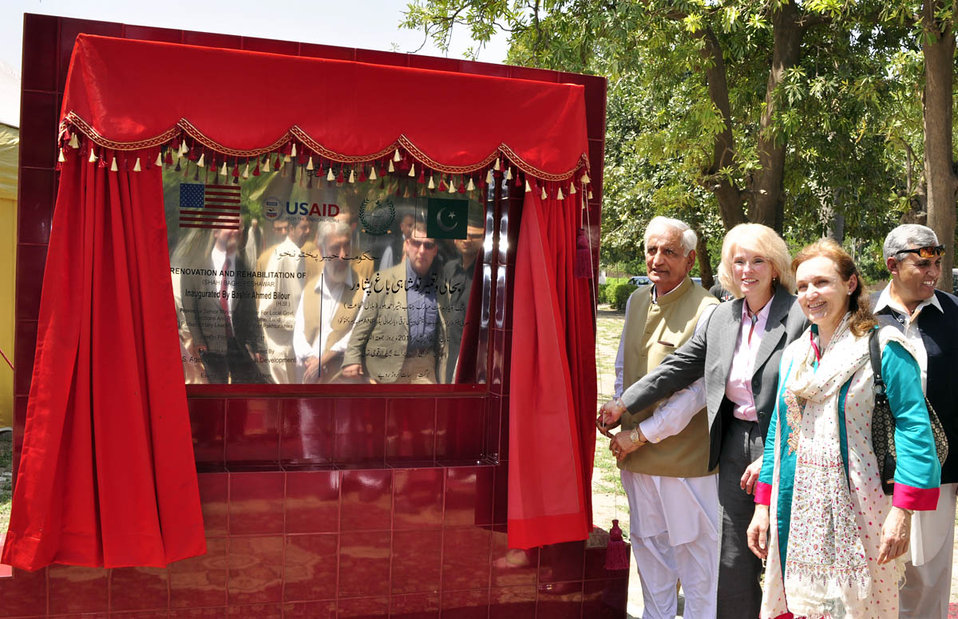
Shahi Bagh Park

Peshawar, April 22, 2011 - Mr. Bashir Ahmed Bilour, Senior Provincial Minister and Minister for Local Governments, Elections and Rural Development, Government of Khyber Pakhtunkhwa (Left) and Senior Deputy Mission Director, U.S. Agency for International Development (USAID) Ms. Denise Herbol (Middle) inaugurated the renovation and improvement of the historical Shahi Bagh in Peshawar. The picture also shows the Acting U.S. Consul General in Peshawar Ms. Constance Arvis (Right). USAID is providing Rs. 70 million for the renovation that will restore the park's original Mughal era look.